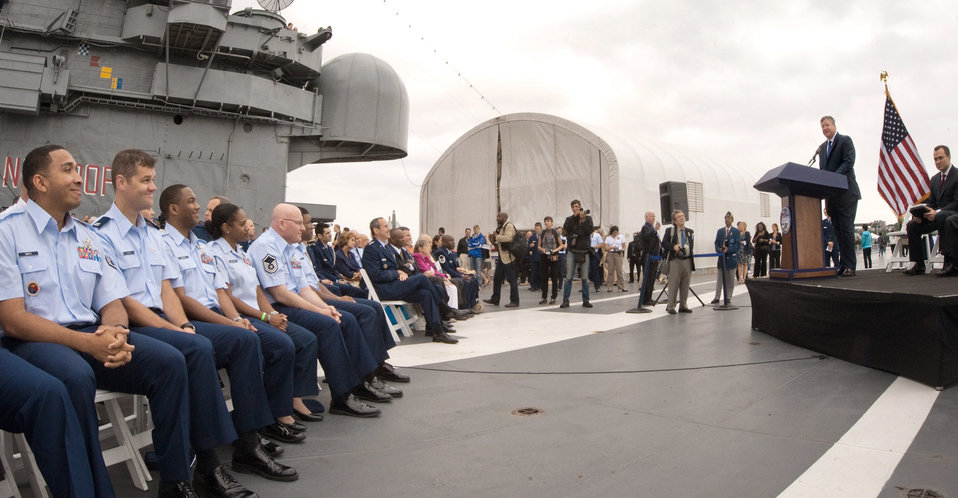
SecAF speaks at AF Week New York City

Secretary of the Air Force Michael Donley speaks during the Air Force Week-New York City proclamation ceremony at the USS Intrepid Sea, Air and Space Museum Aug. 24, 2010, in New York. The event was highlighted by a six-ship flyover by the Air Force aerial demonstration team, the Thunderbirds.